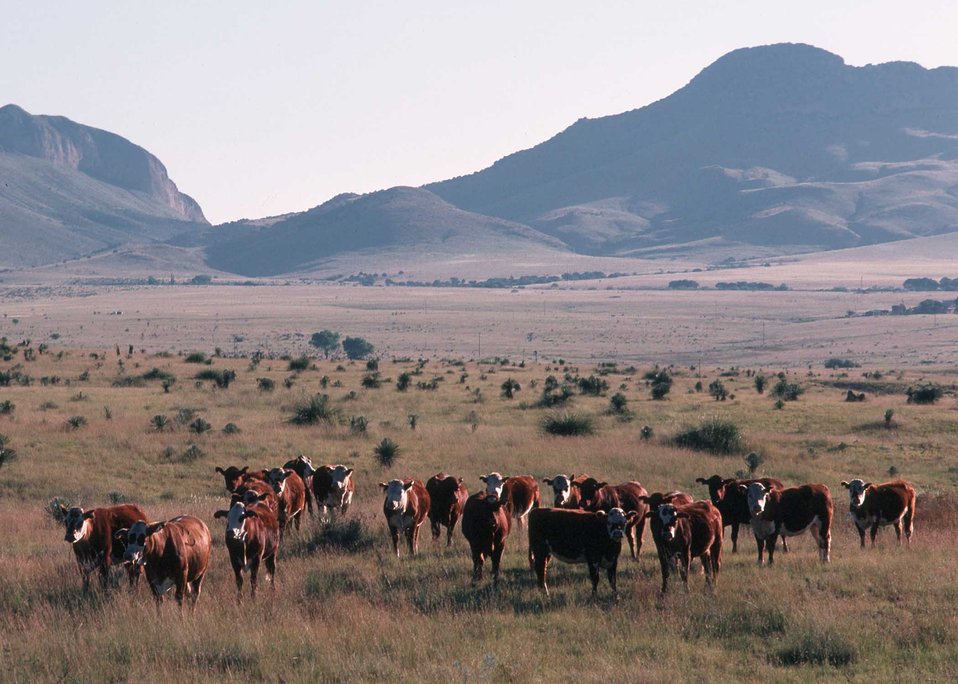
Cattle graze on well-managed rangeland near Tuscon, AZ.